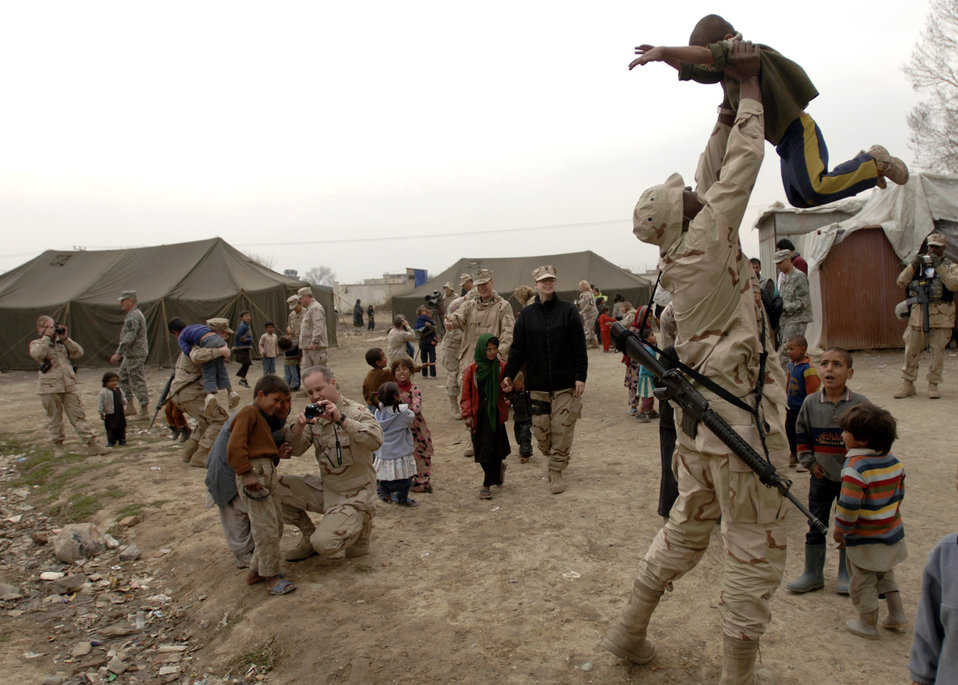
Let's have some fun

DOD civilians and coalition servicemembers play with local refugee children March 16 in Dar Ul Aman, Afghanistan, in support of a volunteer community reach program. During the visit, some 200 bags of clothes, shoes and toys were distributed.